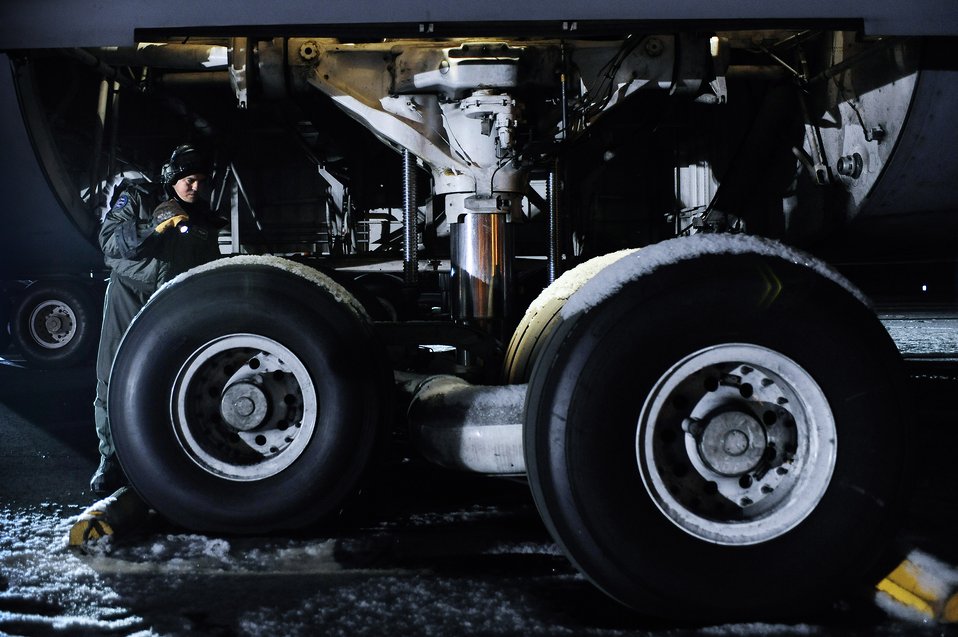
No leaks here

Master Sgt. Jorge Orama checks landing gear on a C-5M Super Galaxy for leaks at Eielson Air Force Base, Alaska Dec. 14 after a cold weather test. This is the first Galaxy with the new CF-6 engines, pylons and auxiliary power units, along with other upgrades to the aircraft's systems.